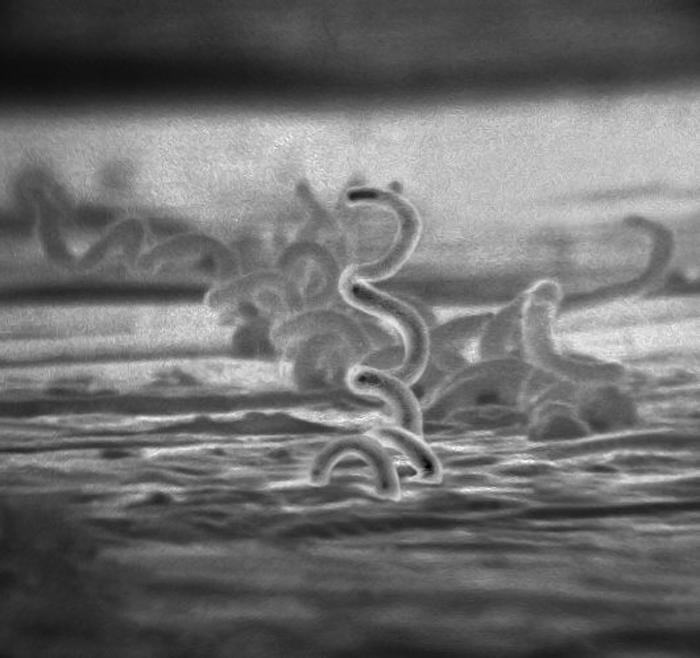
Electron micrograph of Treponema pallidum on cultures of cotton-tail rabbit epithelium cells (Sf1Ep).